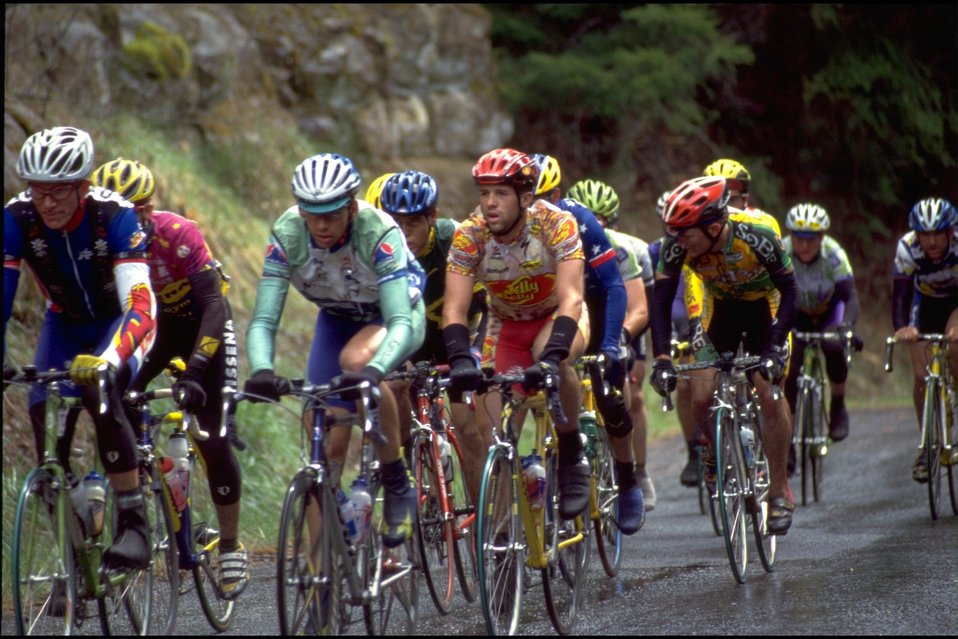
Tour of Willamette.